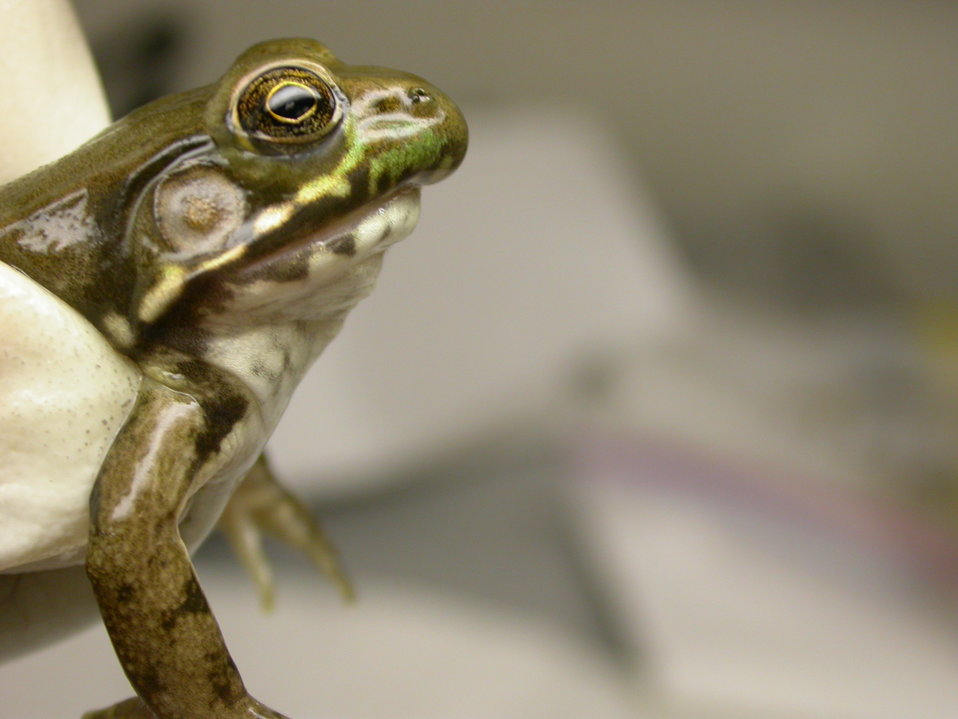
Green frog with shortened lower jaw.

(Robin McWilliams/USFWS) Location: Muscatuck NWR, IN.